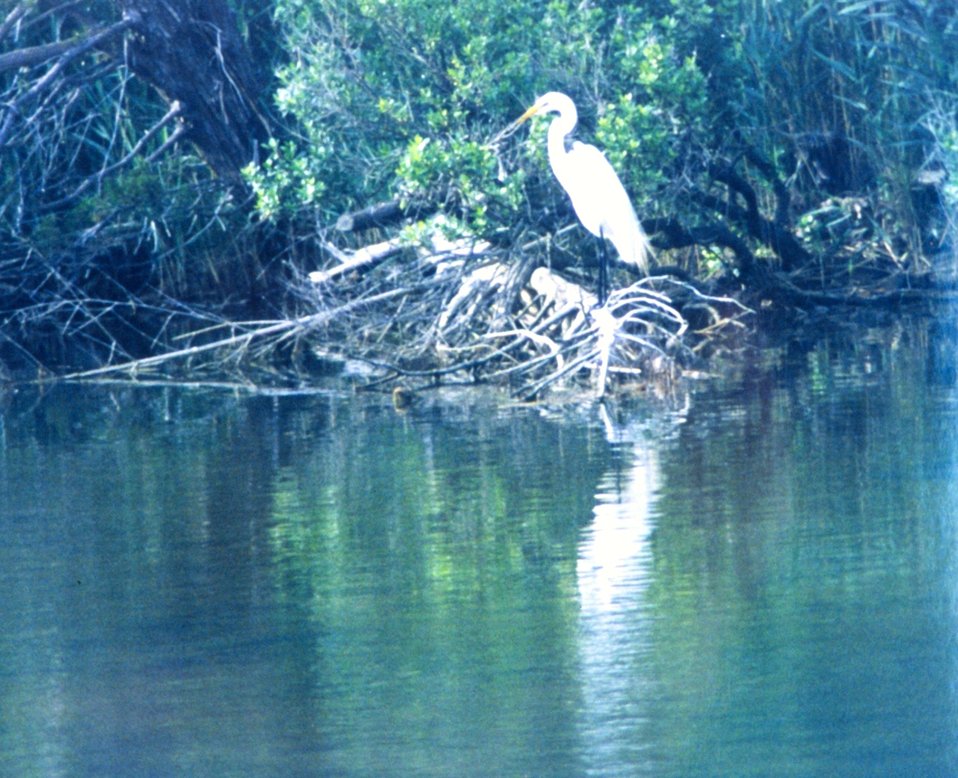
A Great Egret along the bank of the Patuxent River.